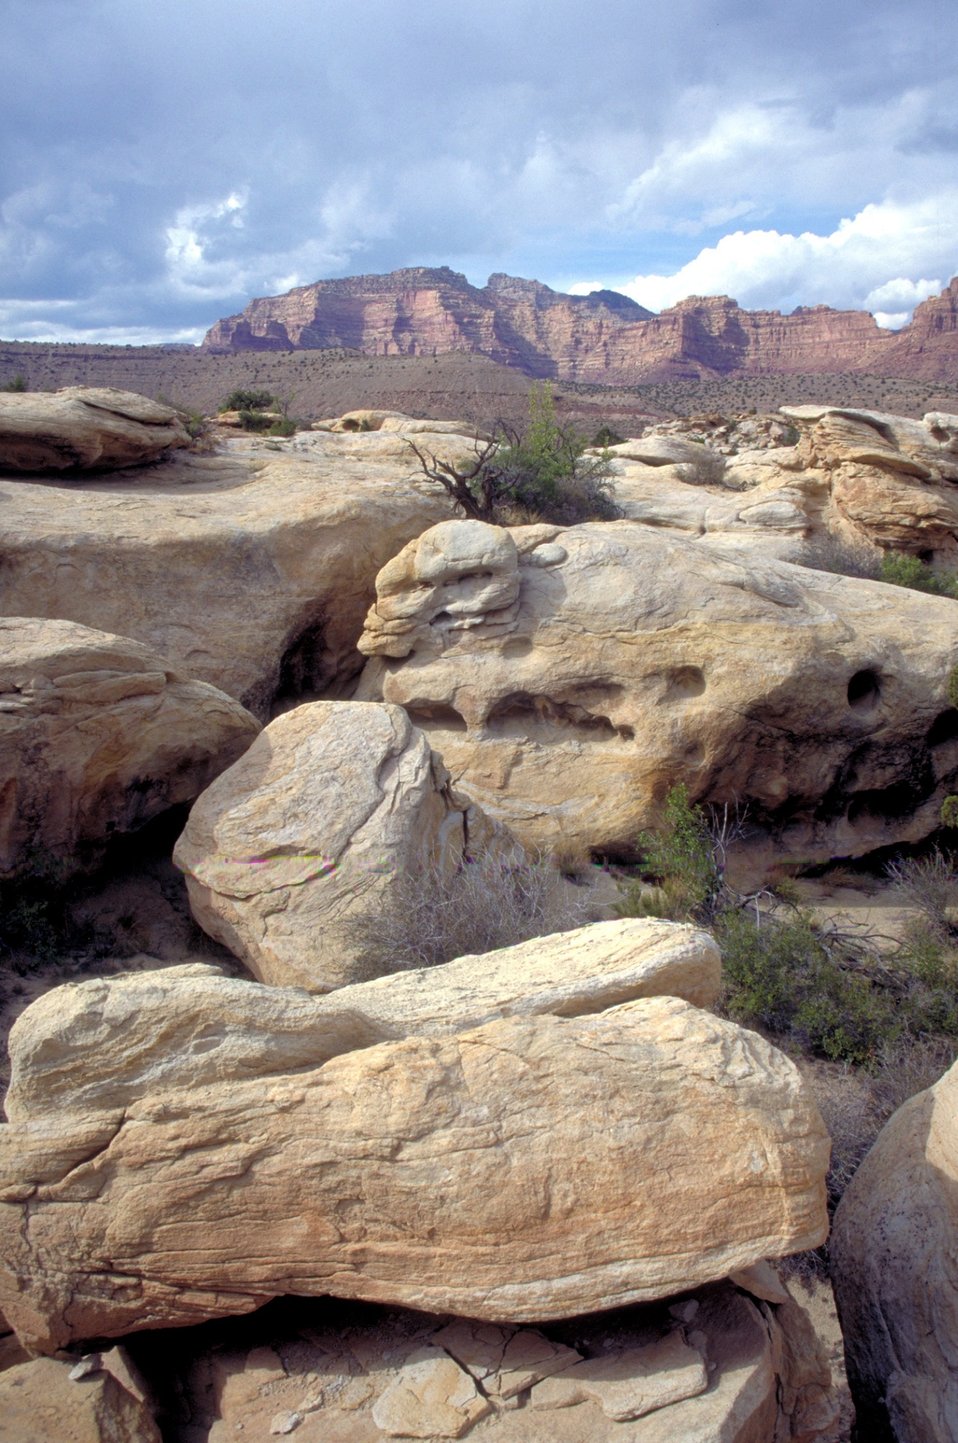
Desolation/Gray Canyons near Price, Utah.